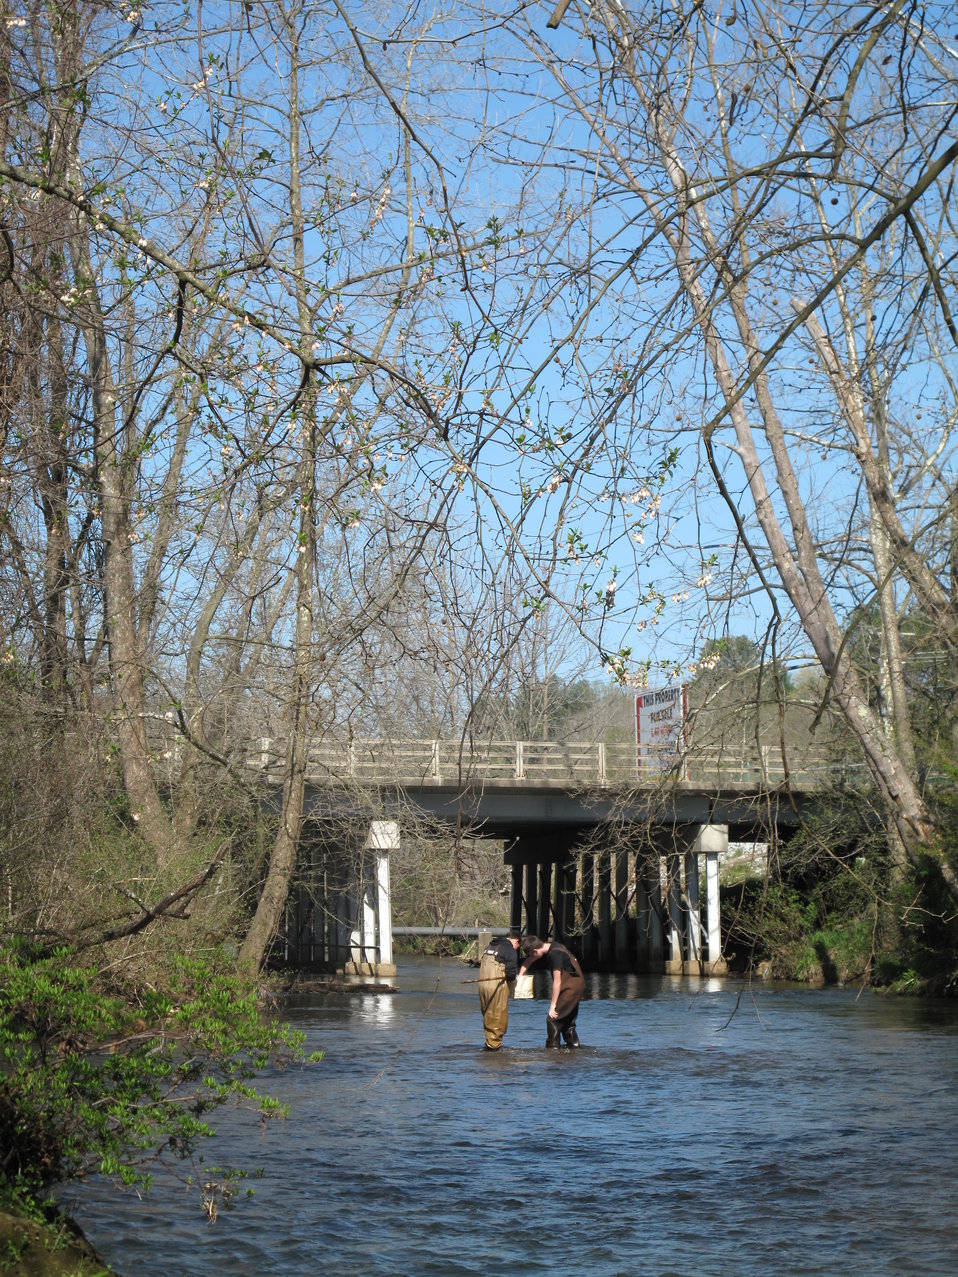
Students working their D-net

Over the course of four days in late April 2014, every eighth grade student at North Carolina’s Macon Middle School, Highlands School, Nantahala School, and Trimont Christian Academy visited Cartoogechaye Park, in Macon County, to learn about rivers.

The students rotated through four stations:
1) water chemistry where they had the opportunity to help test water from Cartoogechaye Creek to gain an idea of the stream’s water quality;
2) aquatic insects, where students collected and identified animals like mayflies and caddisflies, learning how life in the river reflects the health of the river
3) fish, where they were able to collect and identify fish in the stream, and then
4) stream flow, where they measured and calculated the downstream movement of water, including the velocity of the water and the total volume of water being moved per second.

The event was organized by the University of Georgia's Coweeta Long-Term Ecological Research (LTER) Program, which is based at the USFS Coweeta Hydrologic Laboratory. (coweeta.uga.edu/), with sizable support from the Land Trust for the Little Tennessee. Other supporters include the U.S. Fish and Wildlife Service, N.C. Natural Heritage Program, and N.C. Division of Water Resources.